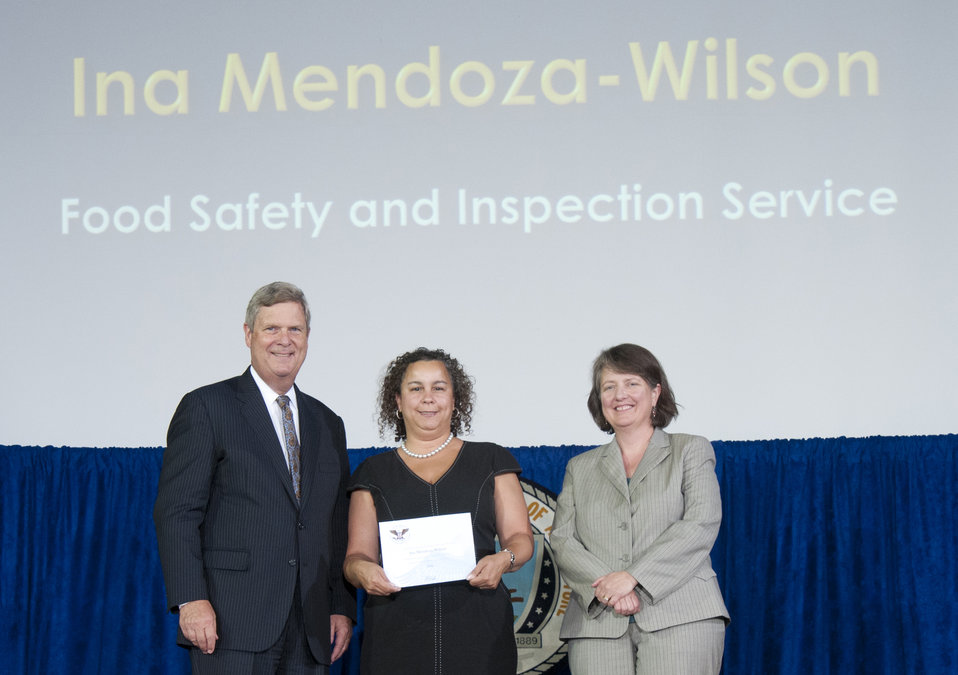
Agriculture Secretary Tom Vilsack and Agriculture Deputy Secretary Kathleen Merrigan present the President’s Call to Service Award to Food Safety and Inspection Service (FSIS) employee Ina Mendoza-Wilson at the U.S. Department of Agriculture (USDA) 64th Annual Honor Awards Ceremony in Washington, D.C. on Wednesday, Sept. 12, 2012. The Bronze Presidential Volunteer Service Award is presented to the employee who has served a minimum of 100 hours and a maximum of 249 hours of service.